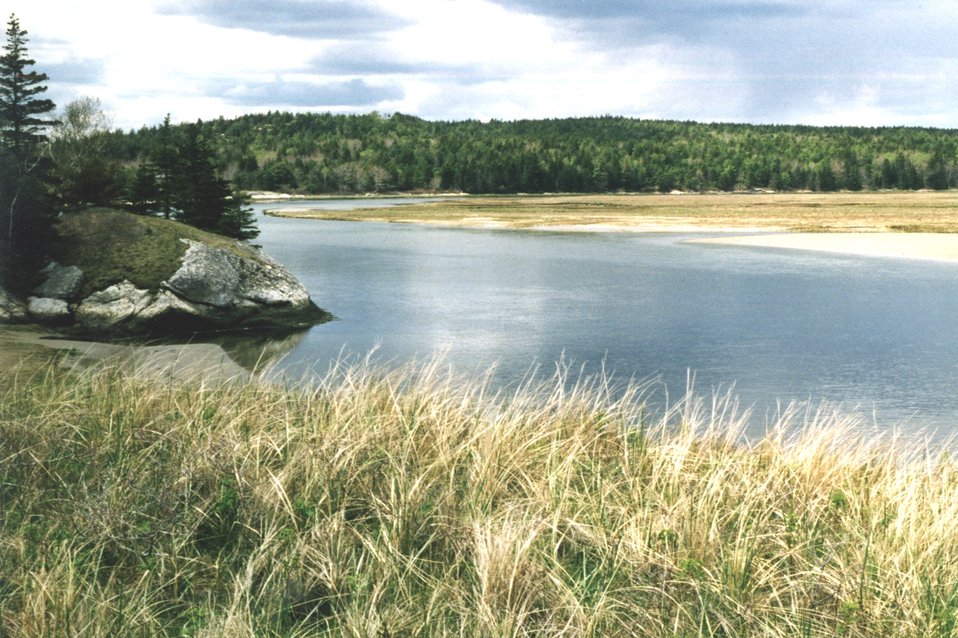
Morse River Inlet showing tidal marsh with bedrock exposed on the periphery.